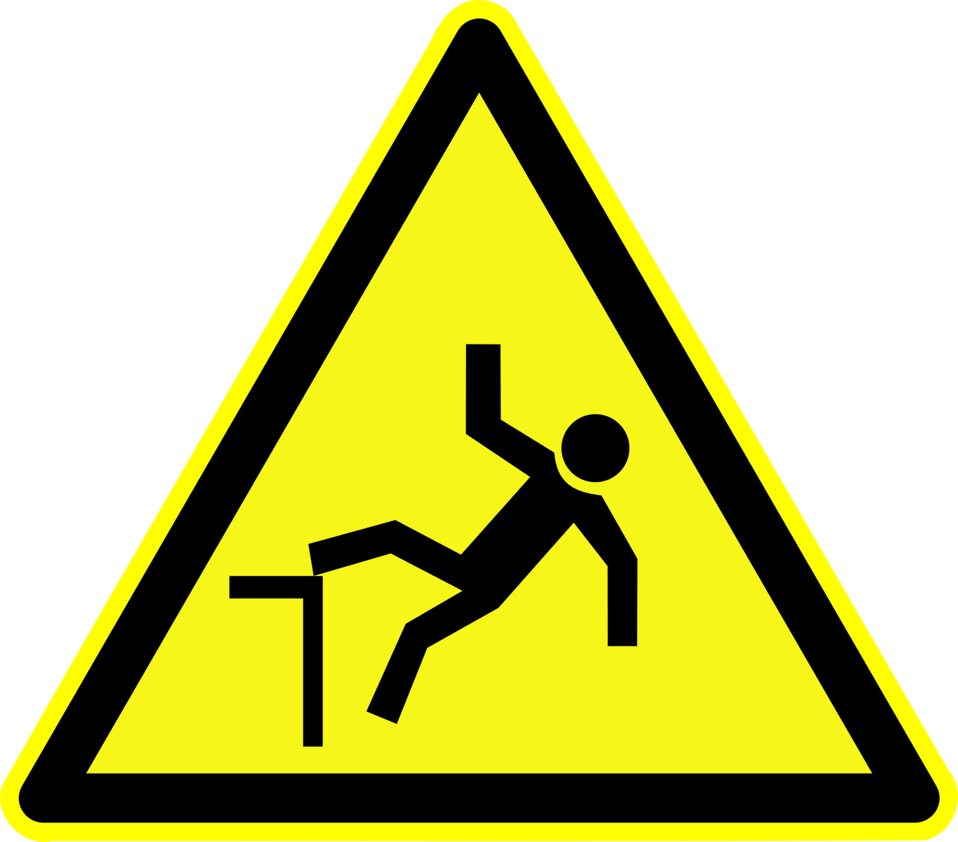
Deutsch: Warnung vor Absturzgefahr, Warnzeichen D-W015 nach DIN 4844-2 Risk of falling, warning sign D-W015 according to German standard DIN 4844-2 Français : Risque de chute de hauteur, signe d'avertissement D-W015 selon la norme allemande DIN 4844-2.